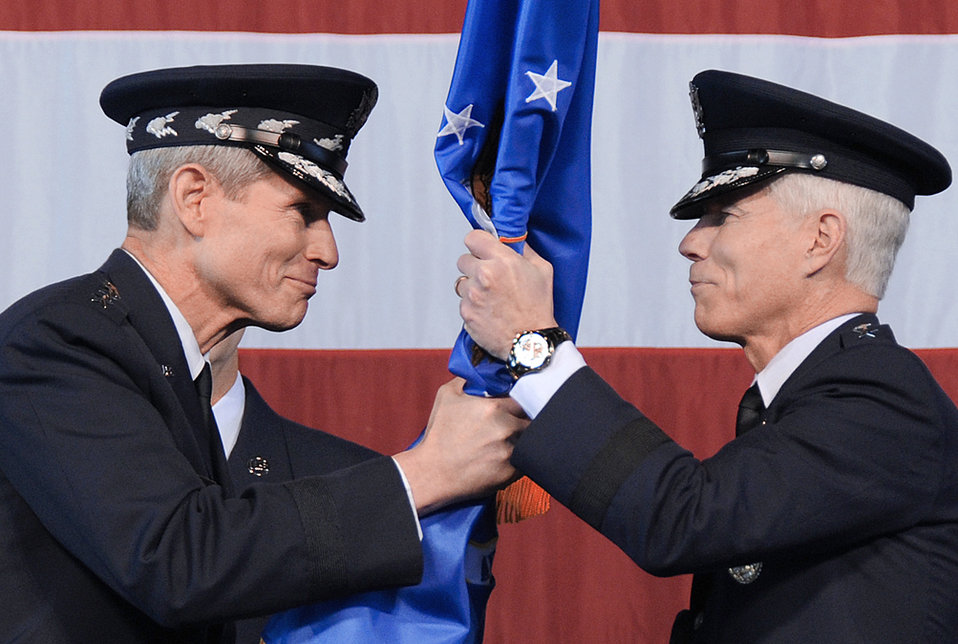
AFSPC commander

Air Force Chief of Staff Gen. Norton Schwartz (left) hands the Air Force Space Command flag to Gen. William L. Shelton (right), as General Shelton becomes the 15th commander of AFSPC in a ceremony Jan. 5, 2011, at Peterson Air Force Base, Colo.